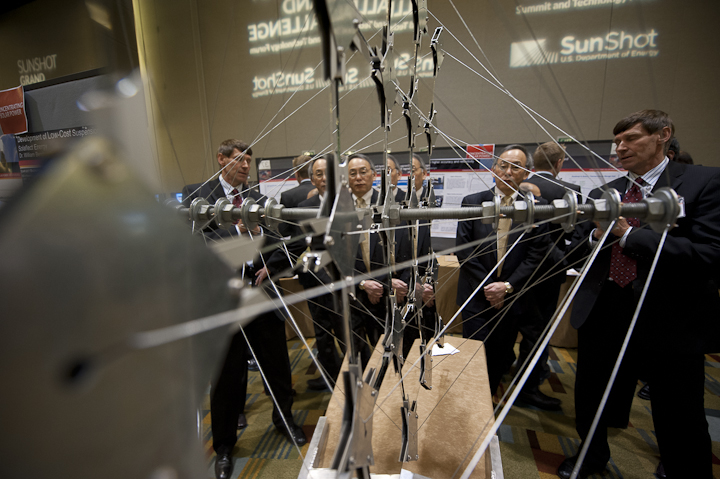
SunShot Suspension Heliostat

June 13, 2012- Steven Chu, Secretary of Energy, U.S. Department of Energy is reflected in a Suspension Heliostat made by Solaflect Energy at the Technology Forum at the SunShot Grand Challenge Summit and Technology Forum in Denver, Colorado.